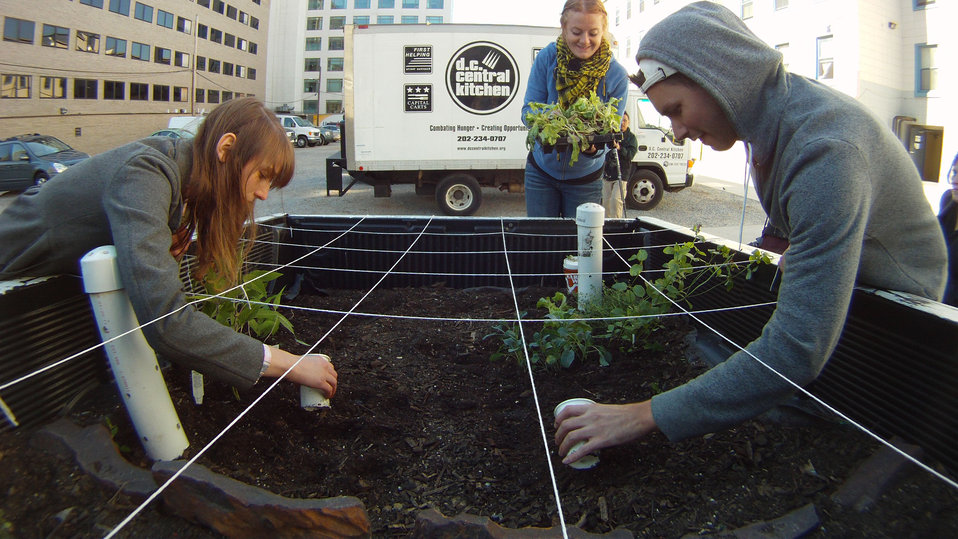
Left to right, D.C. Central Kitchen’s Nutrition Out Reach Coordinator Lydia Mills, Local Initiatives and Procurement Coordinator Joelle Johnson, and The Campus Kitchens Project’s Matt Schnarr water seed holes and select seedlings, during work on the Truck Farm in Washington, D.C. on Friday, April 6, 2012. The Truck Farm is a D.C. Central Kitchen and U.S. Department of Agriculture’s People’s Garden Initiative partnership. Like other Truck Farms around the country, this trusty pick-up will travel around the city to schools and community sites, teaching children about healthy eating and where their food comes from through the garden display in its truck-bed. Along with other local donors, the People’s Garden Initiative supports this “edible exhibit” by providing seedlings and educational materials. Ms. Mills and Mr. Schnarr are on staff with D.C. Central Kitchen for one year as part of their AmeriCorps VISTA service.